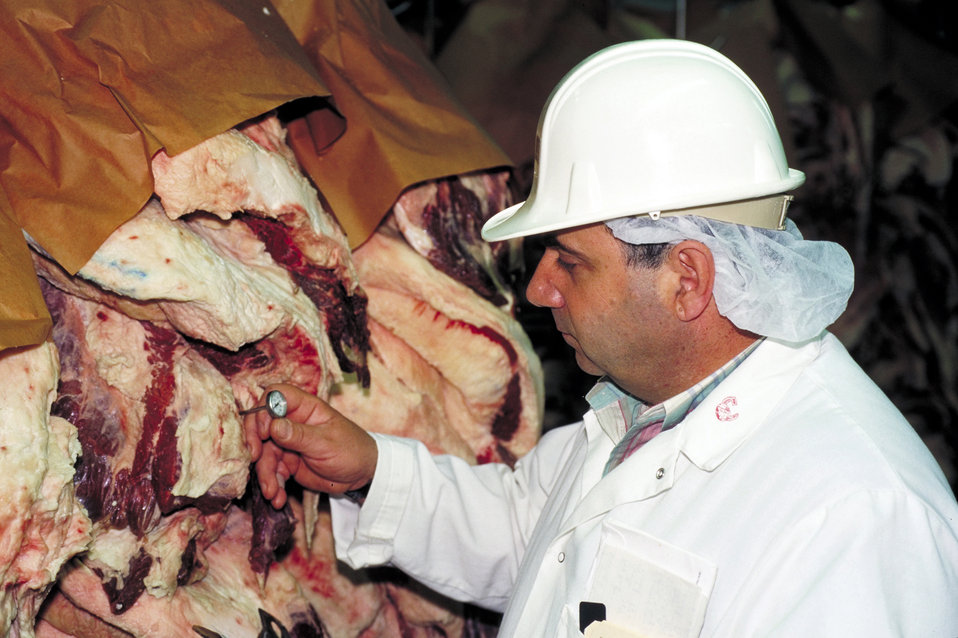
U.S. Department of Agriculture (USDA) Food Safety Inspection Service (FSIS) inspector checks the temperature of beef carcasses at various control points to compare them with those measured and recorded by the plant to prevent multiplication of pathogenic bacteria in compliance with Hazard Analysis and Critical Control Points (HACCP) issued by FSIS on May 13, 1996.